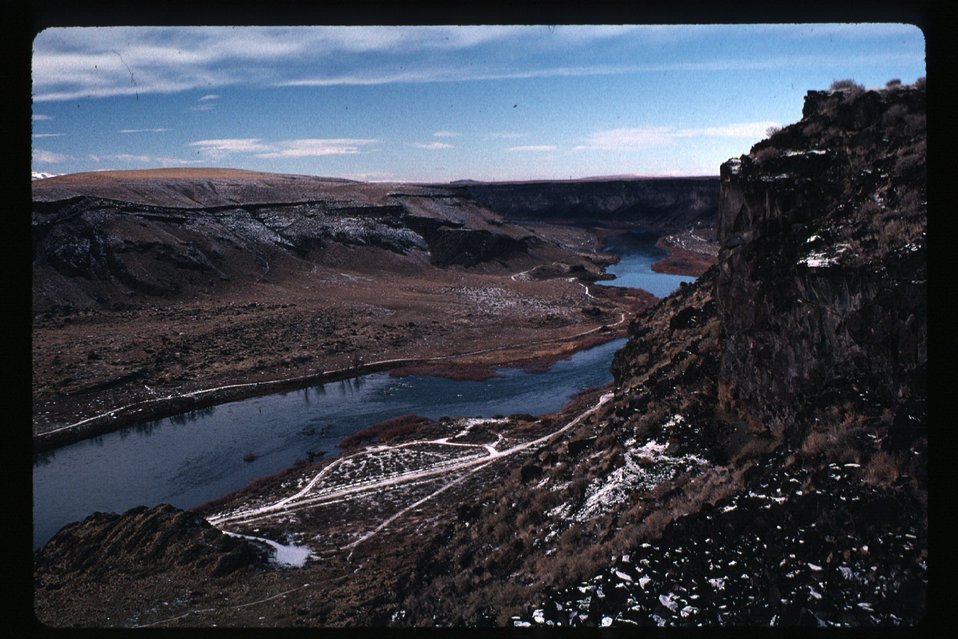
Scenic Birds of Prey National Conservation Area BOP Owyhee Field Office LSRD Lower Snake River District